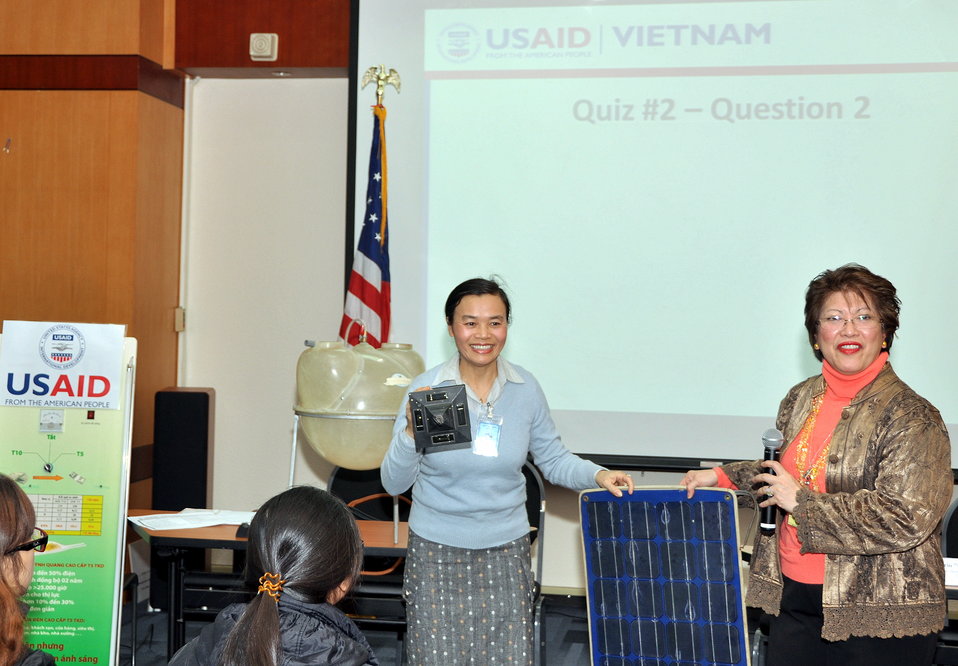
Speaker program on Climate Change and Clean Energy at the American Center

Hanoi, January 16, 2013